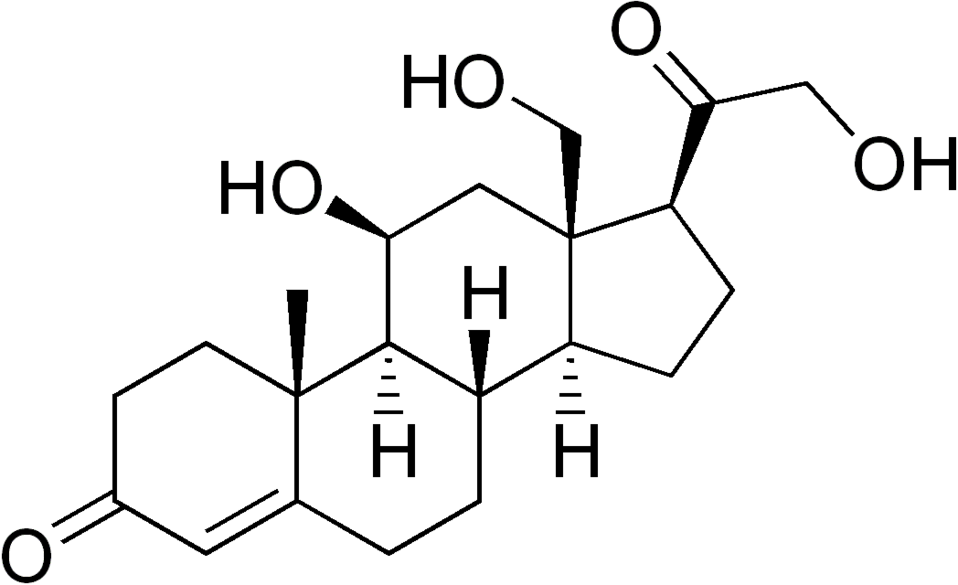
I made it myself using ACD/ChemSketch